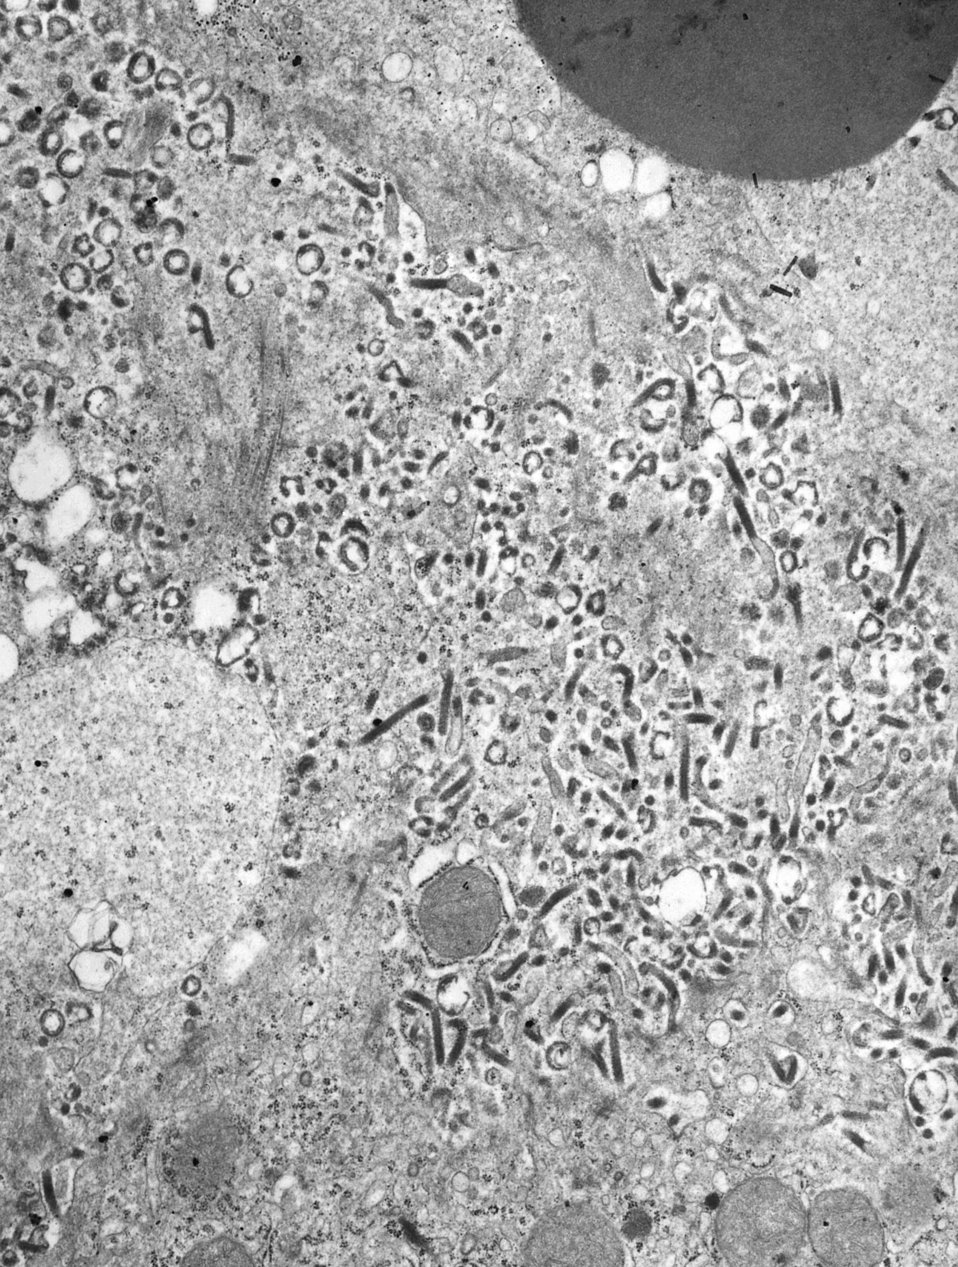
This 1975 transmission electron micrograph (TEM) revealed the presence of numerous Marburg virus virions in a liver tissue specimen. Marburg hemorrhagic fever is a rare, severe type of hemorrhagic fever which affects both humans and non-human primates. Caused by a genetically unique zoonotic (that is, animal-borne) RNA virus of the filovirus family, its recognition led to the creation of this virus family. The four species of Ebola virus are the only other known members of the filovirus family.